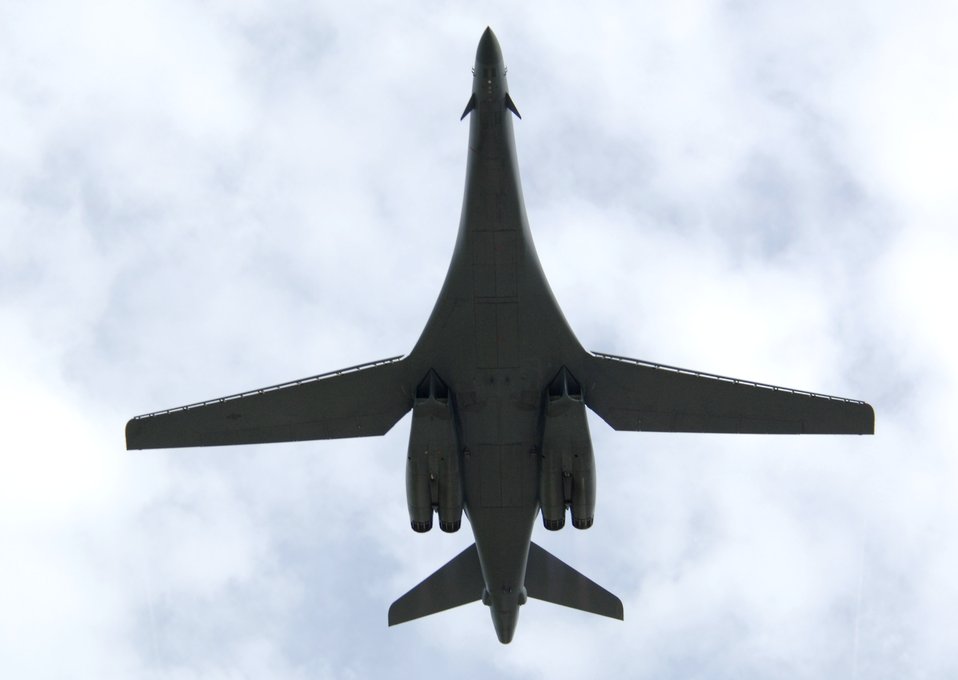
Dec. 3 airpower summary: B-1B bombs enemy in Afghanistan

A B-1B Lancer takes off. A B-1B employed guided bomb unit-31s Dec. 3 against enemy mortar positions located in Asadabad, Afghanistan. A joint terminal attack controller in the area declared the mission as successful as the bombs impacted on the intended targets.